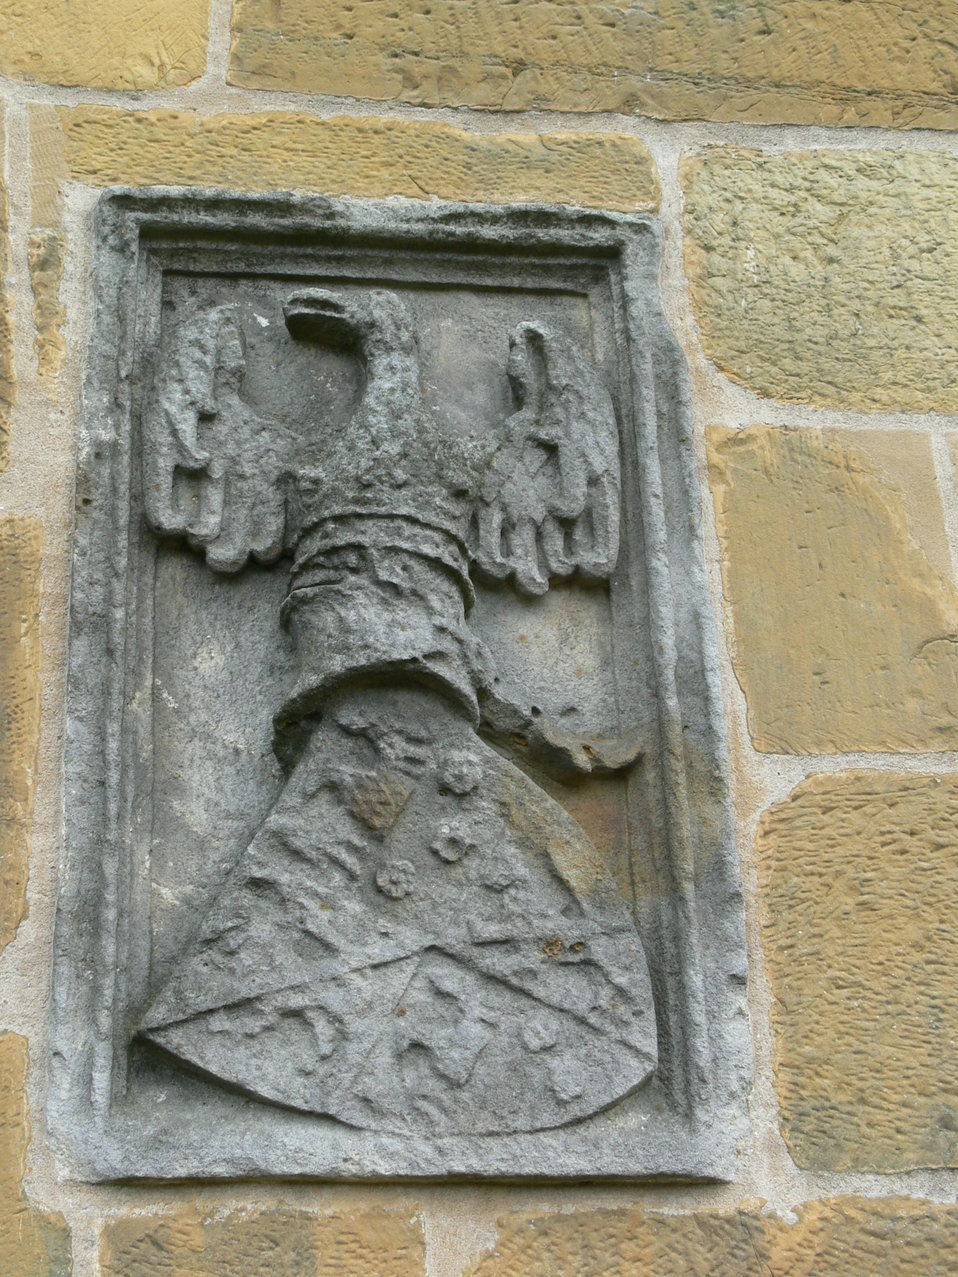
103 Gügel, Wappen